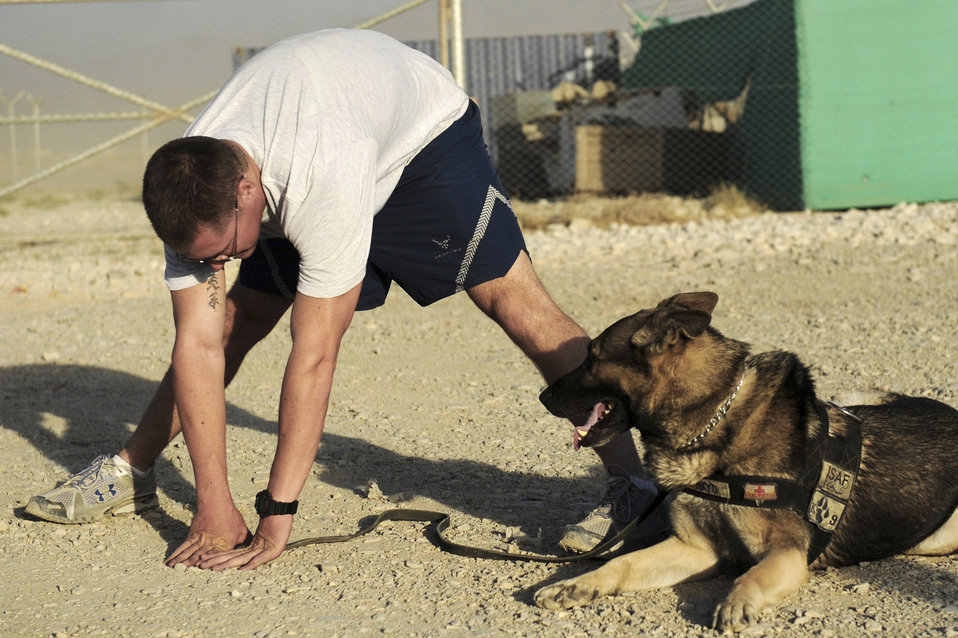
Dog handler team 'lose an Airman'

Staff Sgt. Justin Kitts stretches with his German shepherd, Mayo, Aug. 9 at Bagram Airfield, Afghanistan. Sergeant Kitts, an eight-year Air Force veteran, is a dog handler with the 455th Expeditionary Security Forces Squadron. He is deployed from Luke Air Force Base, Ariz. He and his dog patrol the base and inspect mail, luggage, and vehicles for narcotics.